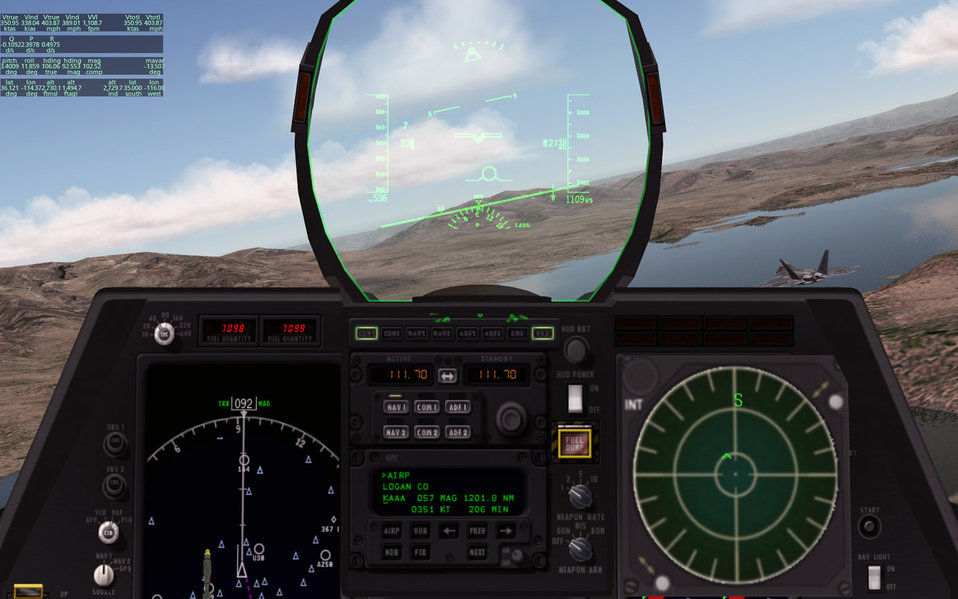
Gaming technology used for interactive military training

This screenshot shows flight simulation software created by Air Force researchers who leveraged existing commercial gaming software to demonstrate an alternative way to quickly deliver a low-cost, realistic simulation program with genuine training effectiveness. Researchers integrated the graphics-rich commercial package with high-fidelity real-world aircraft models.